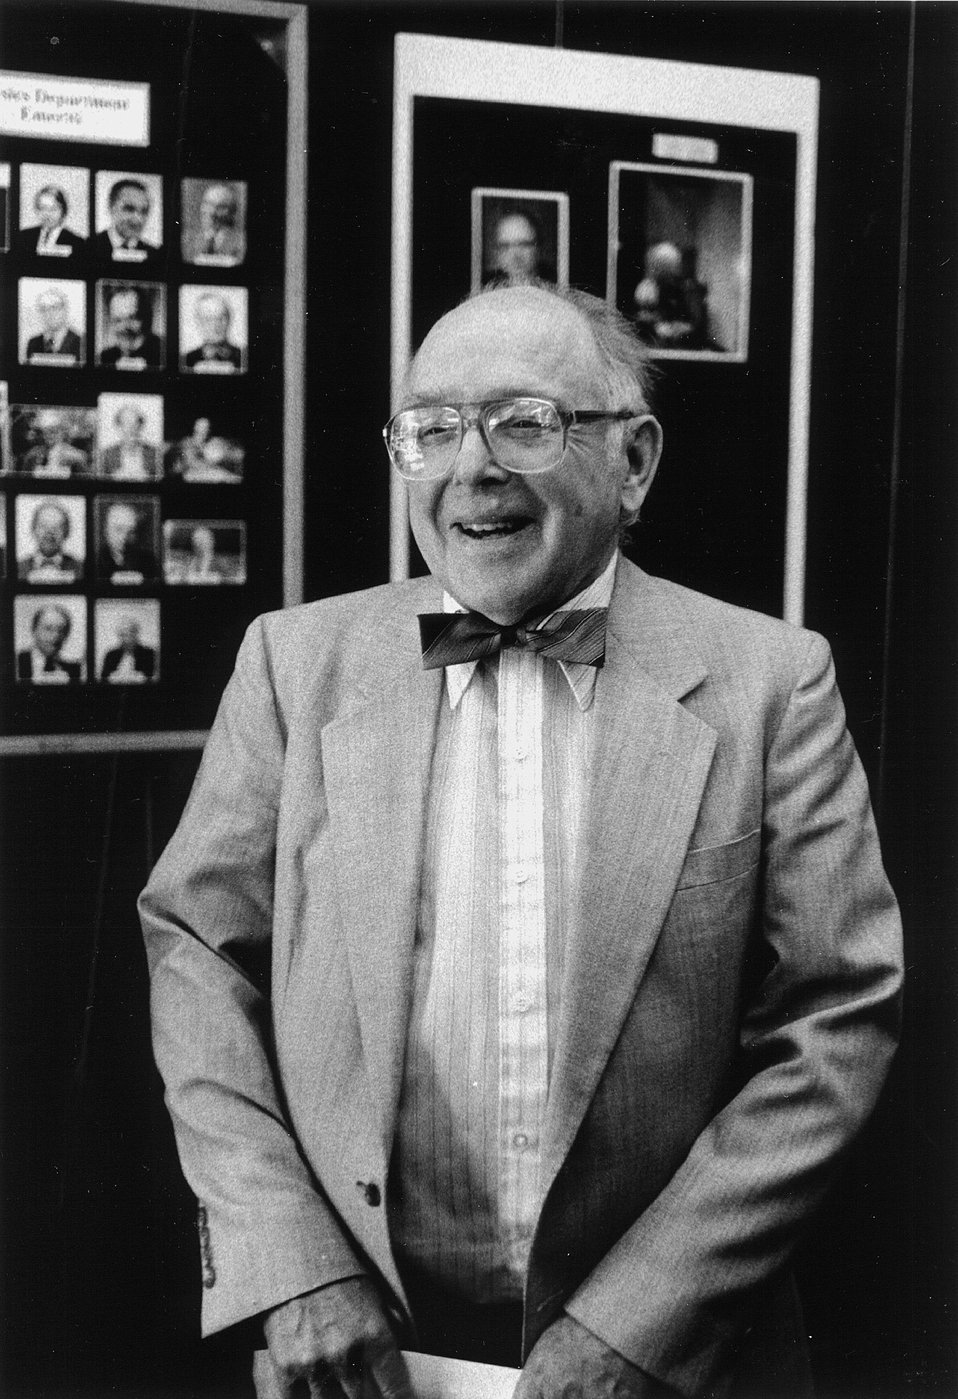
MIT Prof. Emeritus Clifford G. Shull. 1994 Nobel Prize Winner in Physics. c. October 12, 1994